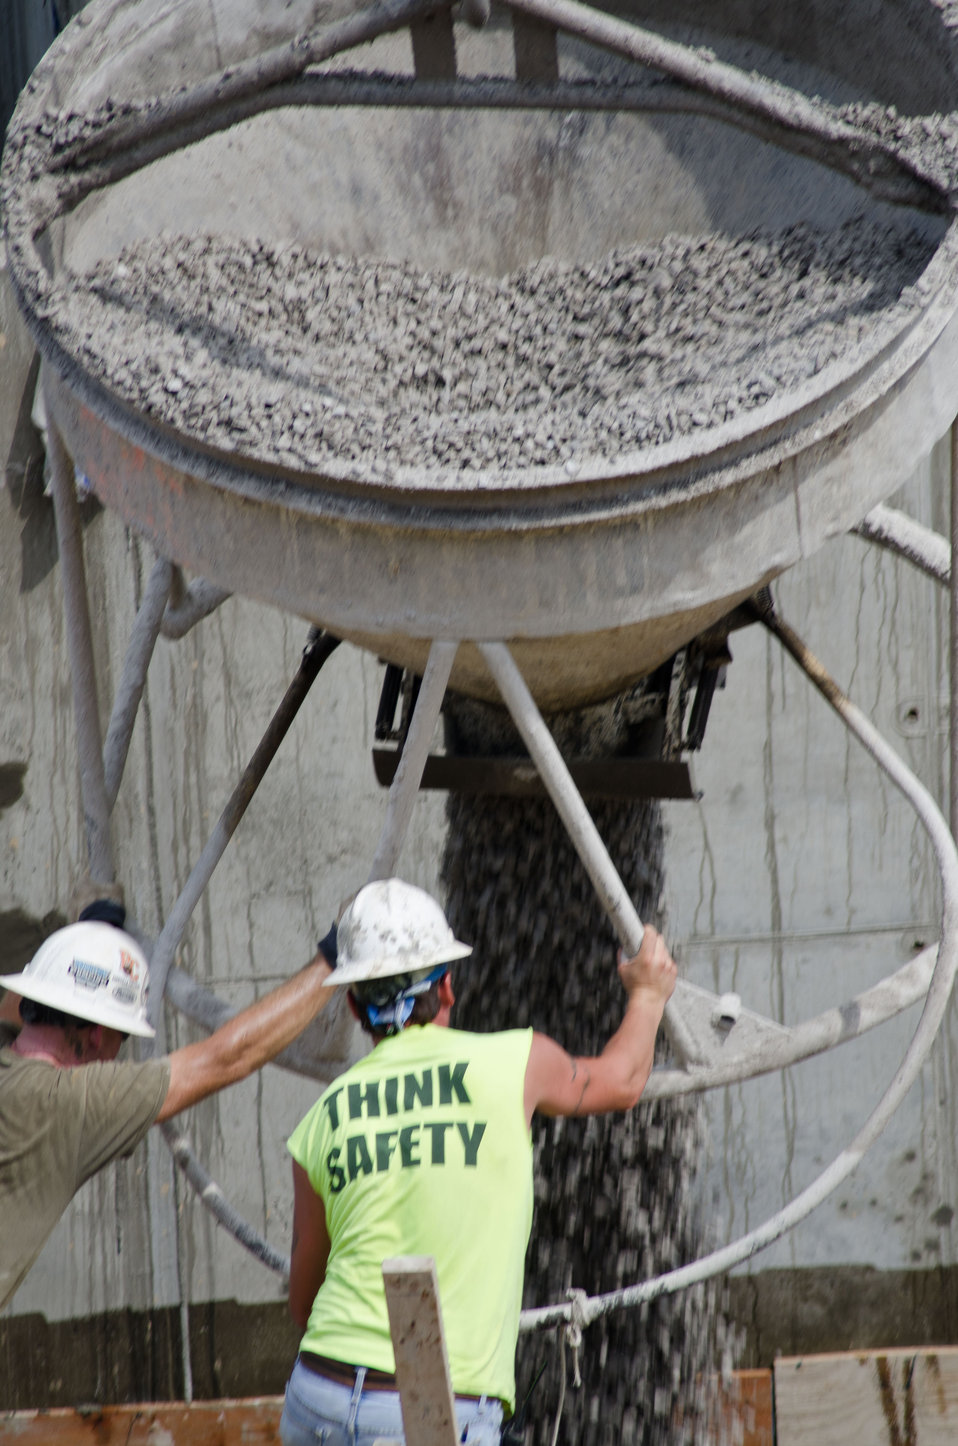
A crane carries gravel to construction workers filling a space near the base of an elevator shaft, the core structure of the $25 million expansion project at University of Pikeville Kentucky College of Osteopathic Medicine (UP-KYCOM), Pikeville, KY on Tuesday, July 12, 2011.